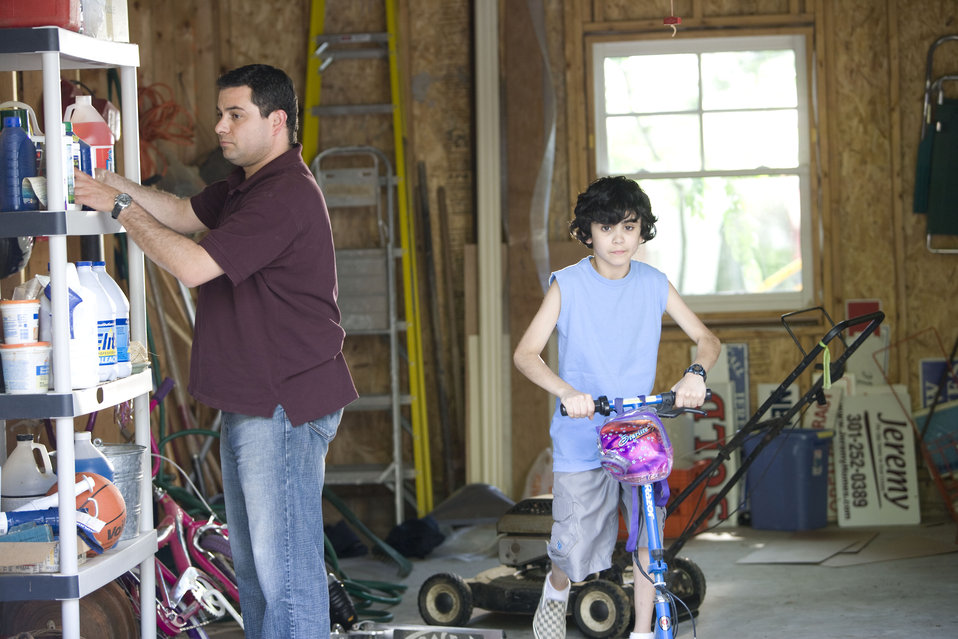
Here we see a father organizing his garage contents, while his son was about to embark on a scooter ride.